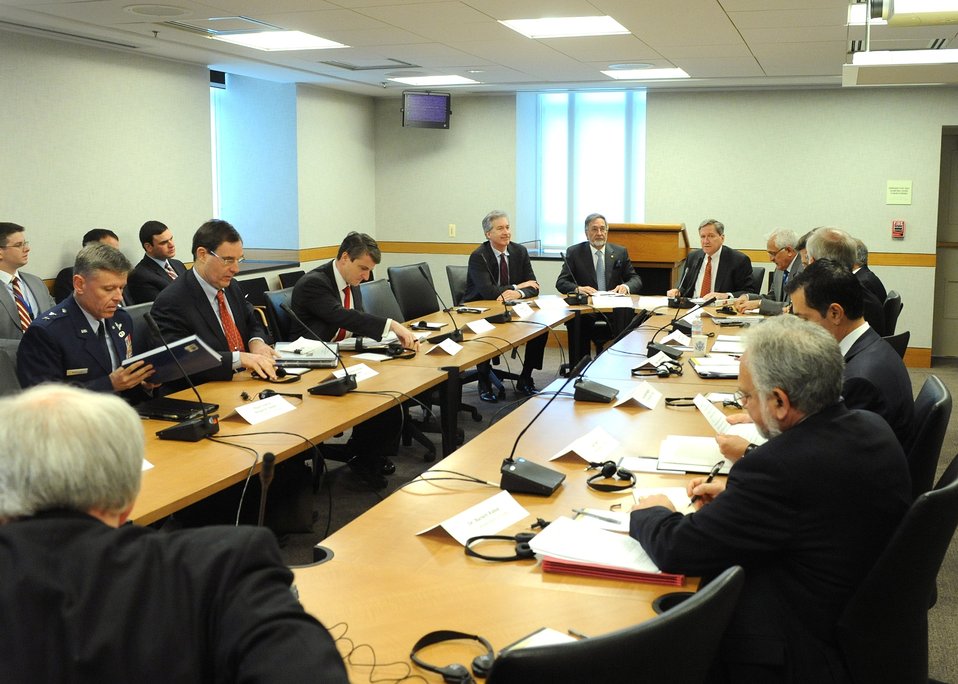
Foreign Policy and Strategic Issues Interagency Working Group Session of the U.S.-Afghanistan Strategic Partnership Dialogue

U.S. Special Representative for Afghanistan and Pakistan Richard Holbrooke, in addition Under Secretary for Political Affairs William J. Burns, Afghan Foreign Minister Rassoul, Afghan National Security Advisor Spanta, Afghan Minister Stanekzai, and other senior U.S. officials meet during the Foreign Policy and Strategic Issues Interagency Working Group Session of the U.S.-Afghanistan Strategic Partnership Dialogue at the U.S. Department of State, Washington, D.C., May 11, 2010.